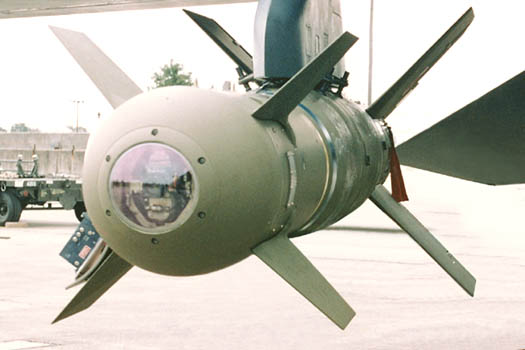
GBU-15